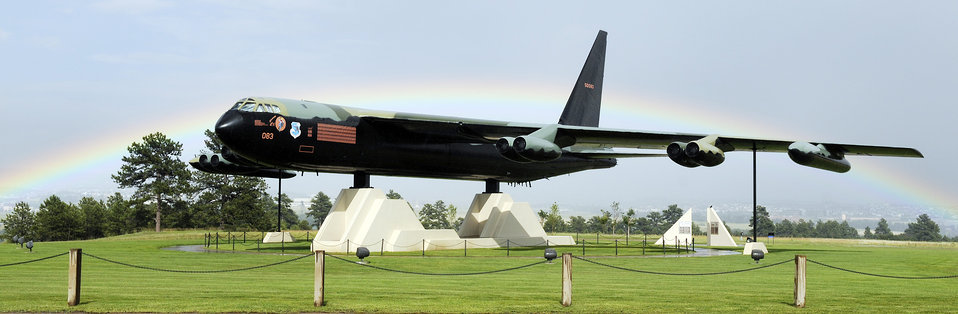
B-52D Static Display

U.S. Air Force Academy, CO -- Under the arch of a late afternoon rainbow Jul 30 at the U.S. Air Force Academy, is B-52D